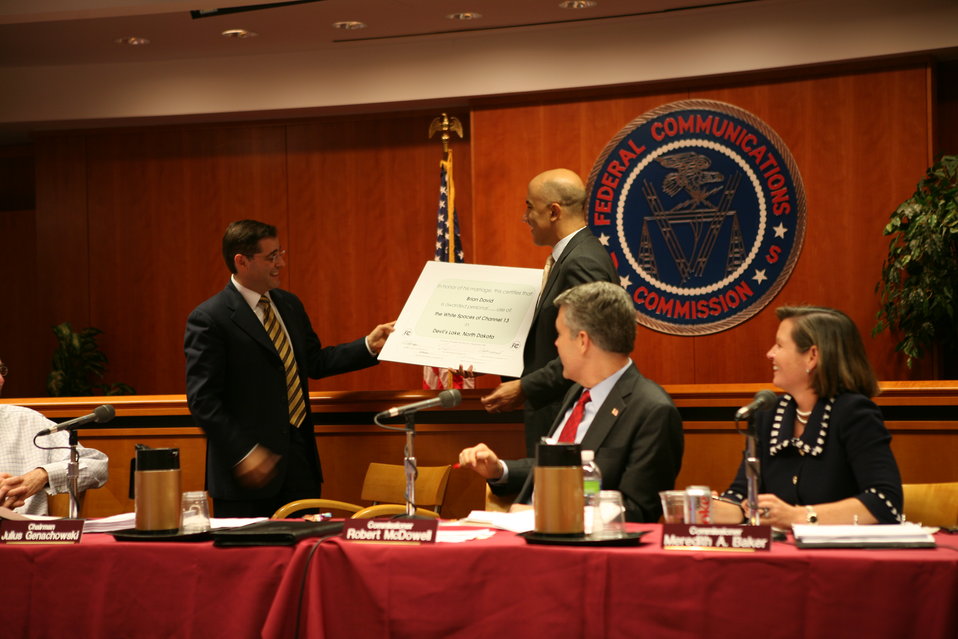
Midterm Review8

Broadband Midterm Review, 9-29-09